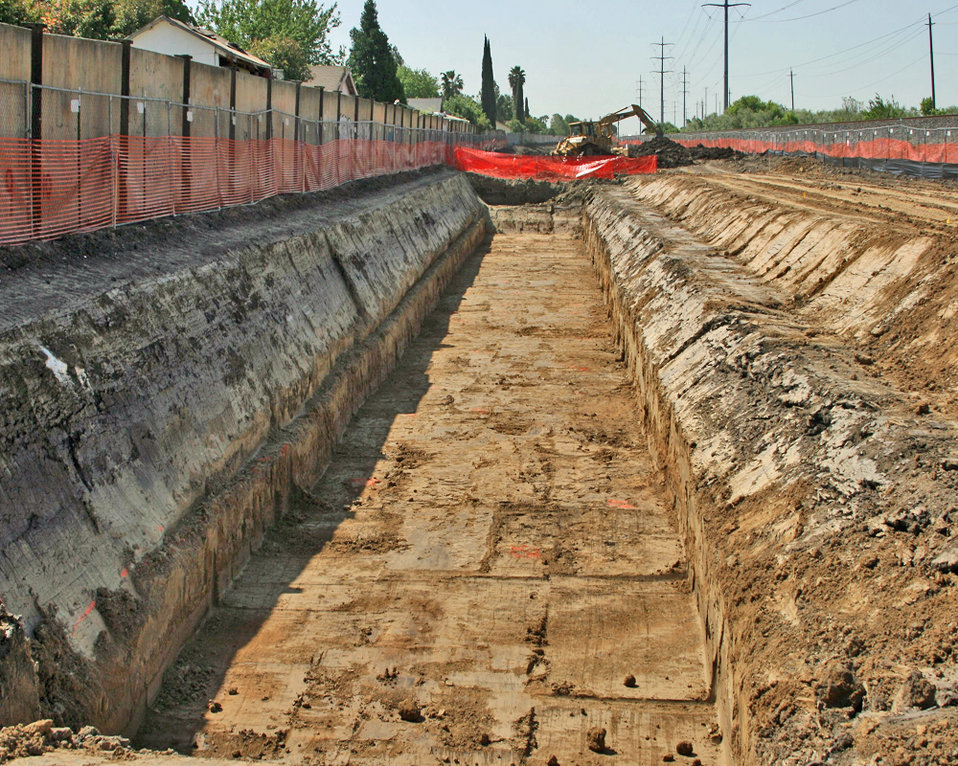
Flood wall work continues - May 10, 2012

Construction of a new flood wall continues along Morrison Creek in south Sacramento, Calif., May 10, 2012. Contractors for the U.S. Army Corps of Engineers Sacramento District are installing a 3,300-foot-long flood wall that will extend an existing flood wall, further reducing flood risk in the area. The work is a joint effort between the Corps, the Central Valley Flood Protection Board and the Sacramento Area Flood Control Agency. Completion is scheduled for 2013.